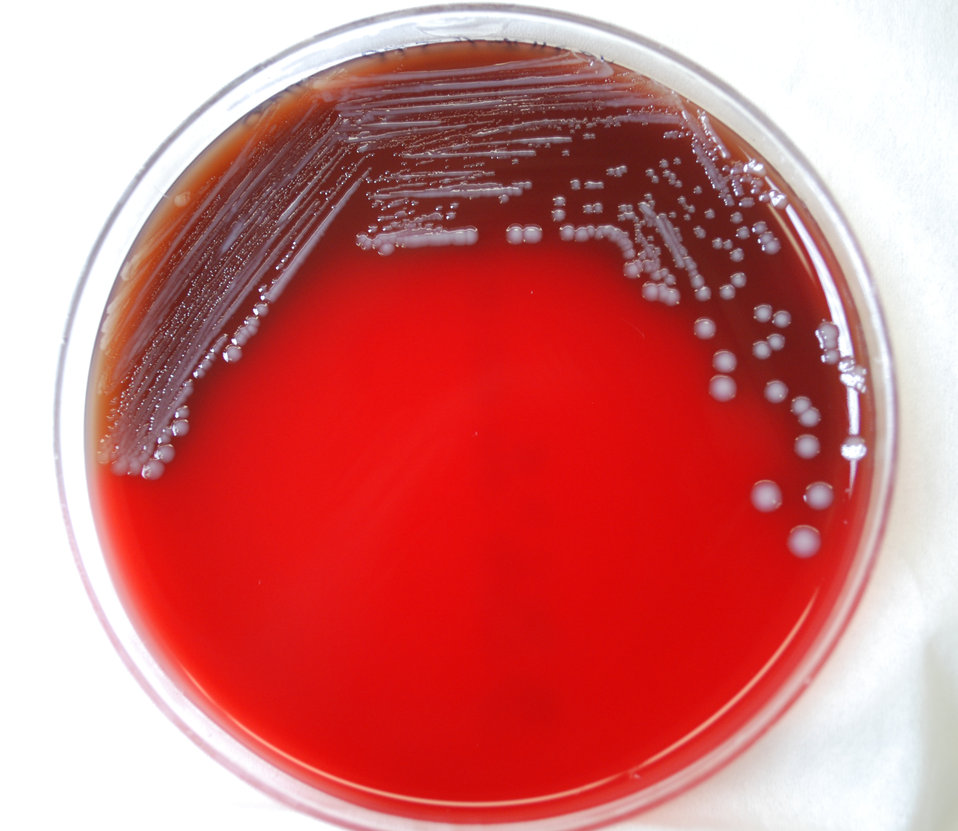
This photograph depicts the colonial morphology displayed by Gram-negative Yersinia pestis bacteria, which was grown on a medium of sheep's blood agar (SBA), for a 72 hour time period, at a temperature of 37�C. See PHIL 12260 and 12261, for closer views of these bacterial colonies. Y. pestis bacteria cause the infectious disease known as plague, affecting both humans and animals.